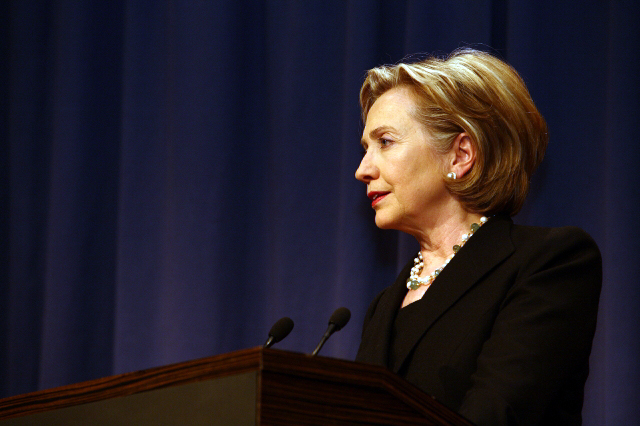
Press Conference With Russian Foreign Minister

Press conference after dinner meeting between U.S. Secretary of State Hillary Rodham Clinton and Russian Foreign Minister Sergey Lavrov in Geneva, Switzerland March 6, 2009.